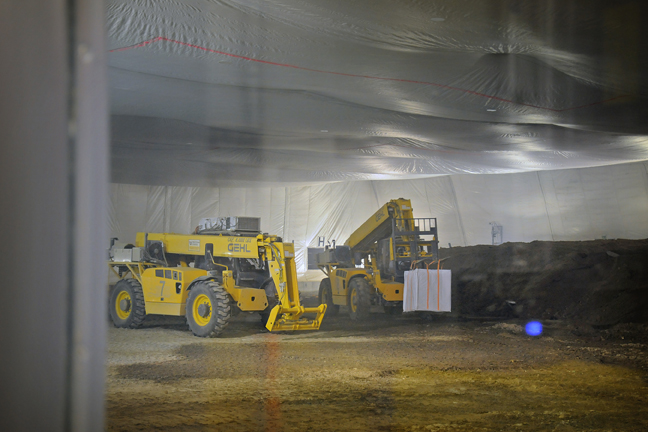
Recovery Act funds buried waste exhumation at Idaho Site’s Pit 9

Waste exhumation activities underway at Pit 9.